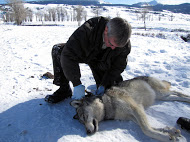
Gray wolf

Scientific name: Canis lupus
Status: Endangered, Non-Essential Experimental Population Delisted
Photo credit: Lori Iverson USFWS
Refuge Manager Steve Kallin places a collar on a yearling female wolf